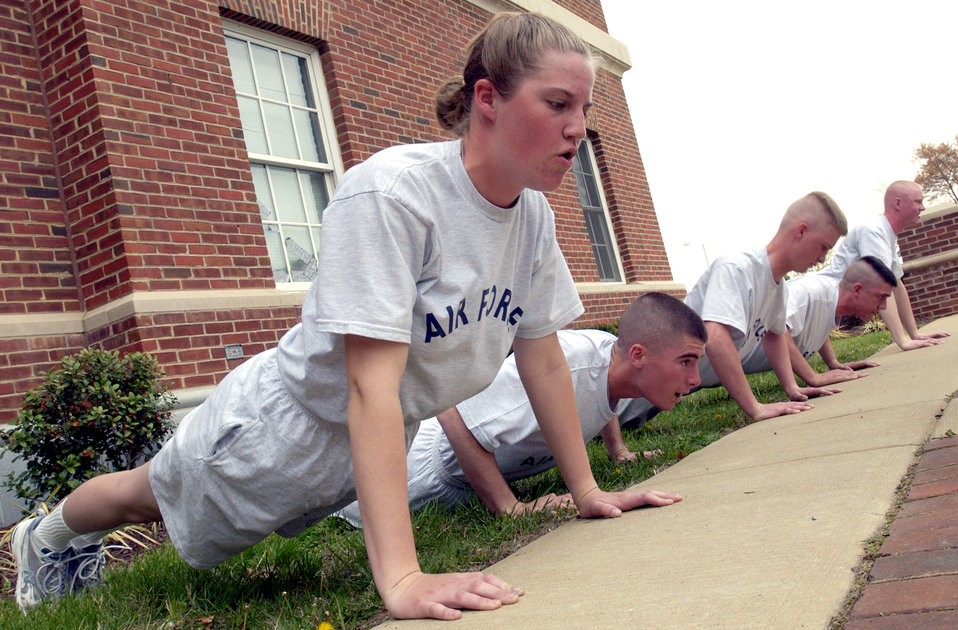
The ups and downs of training

BOLLING AIR FORCE BASE, D.C. -- Trainees at the U.S. Air Force Honor Guard technical school here participate in a physical-fitness routine several times a week. Their routine, which includes push-ups, crunches and a 1.5-mile run, mirrors the proposed Air Force fitness standards, which will be implemented in January 2004.